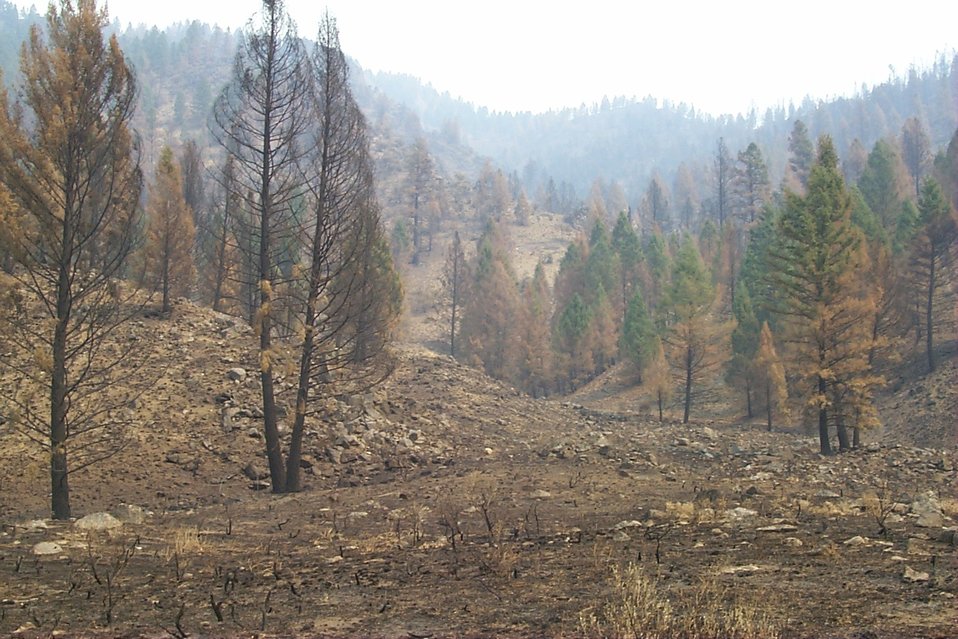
Burn area Fire Clearwater Fire Salmon Field Office USRD Upper Snake River District